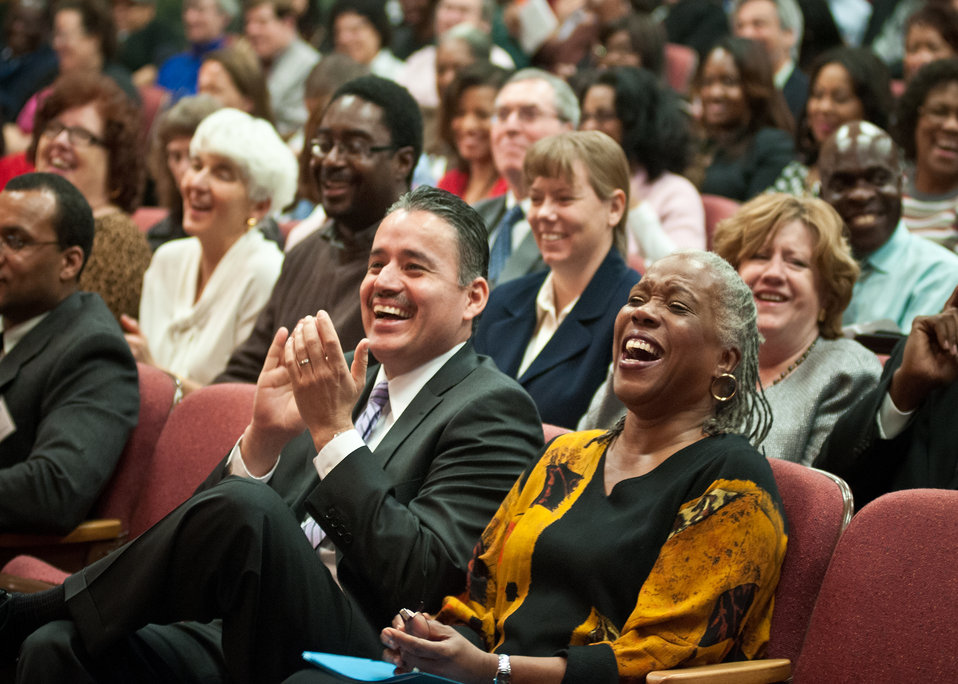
Oscar Gonzales (left), Deputy Assistant Secretary for Administration and Audrey Rowe (right), Administrator, Food and Nutrition Service listen to Tim Reid, Actor, Comedian, Filmmaker and Social Activist the guest speaker at the United States Department of Agriculture Black History Month celebration “Black Women in American Culture and History” in Washington, D.C. on Thursday, February 16, 2012. Reid brought the house down at times with his humor.